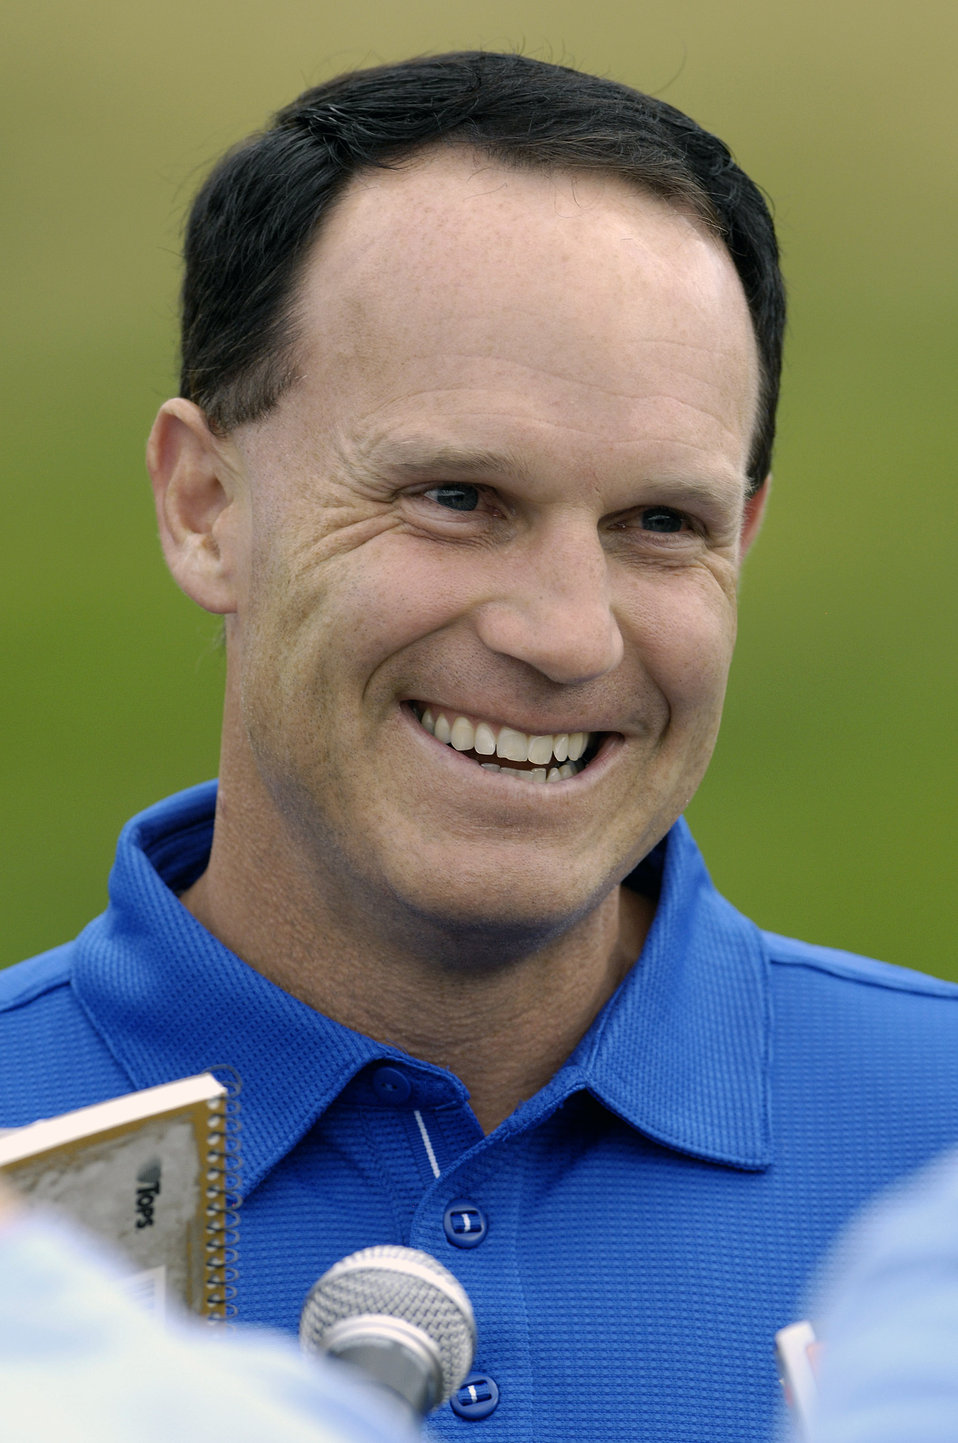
First day of football practice at the Academy

Head football coach Troy Calhoun reacts to a reporter's question July 30 at the U.S. Air Force Academy in Colorado. Coach Calhoun enters his second year as head coach, guiding the Falcons to their best Mountain West Conference record in school history in 2007 with a 9-4 record.